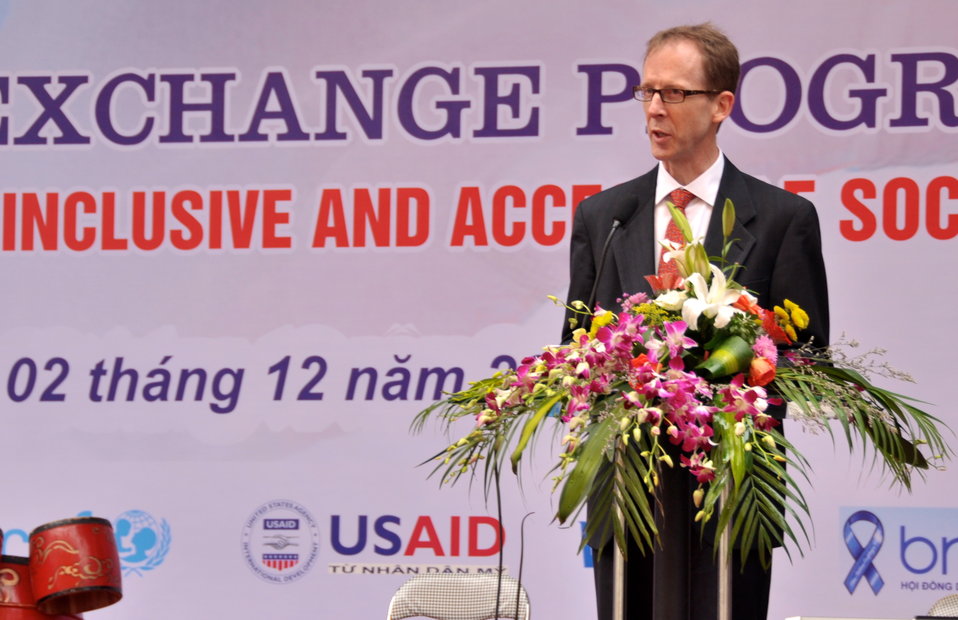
USAID Mission Director Joakim Parker joins celebration of International Day of Persons with Disabilities in Hanoi, Vietnam

December 2, 2012